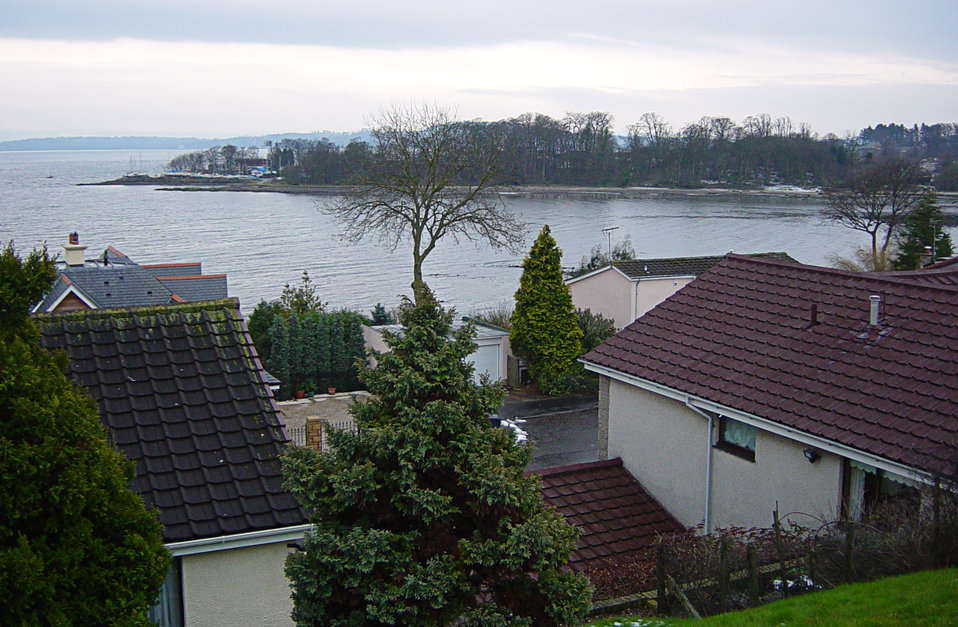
Photograph taken by me showing a view south across Dalgety Bay and across the Firth of Forth, taken in March 2006.